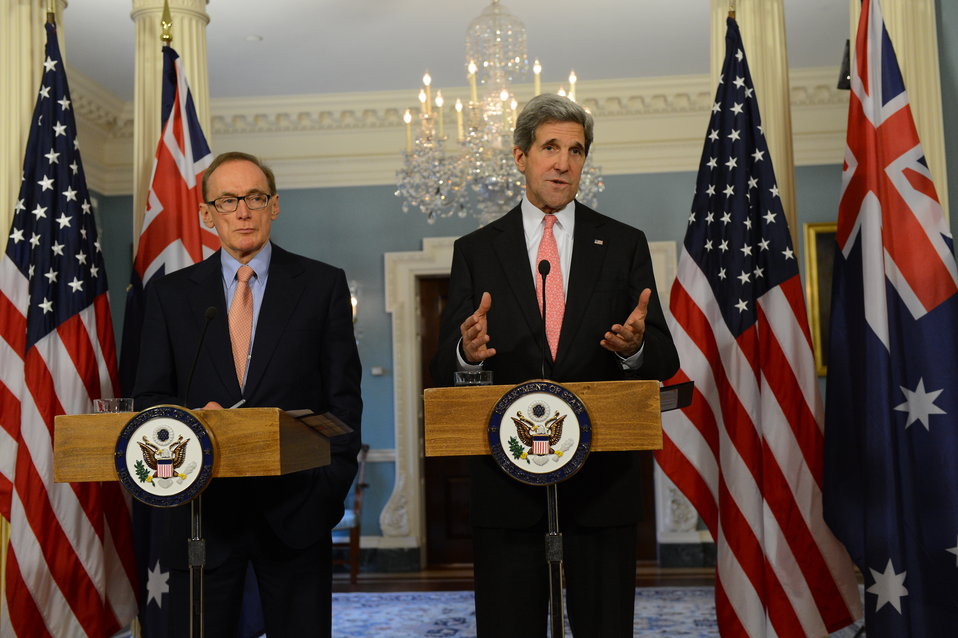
Secretary Kerry and Australian Foreign Minister Carr Address Reporters

U.S. Secretary of State John Kerry and Australian Foreign Minister Bob Carr address reporters after their bilateral meeting at the U.S. Department of State in Washington, D.C., on March 18, 2013.